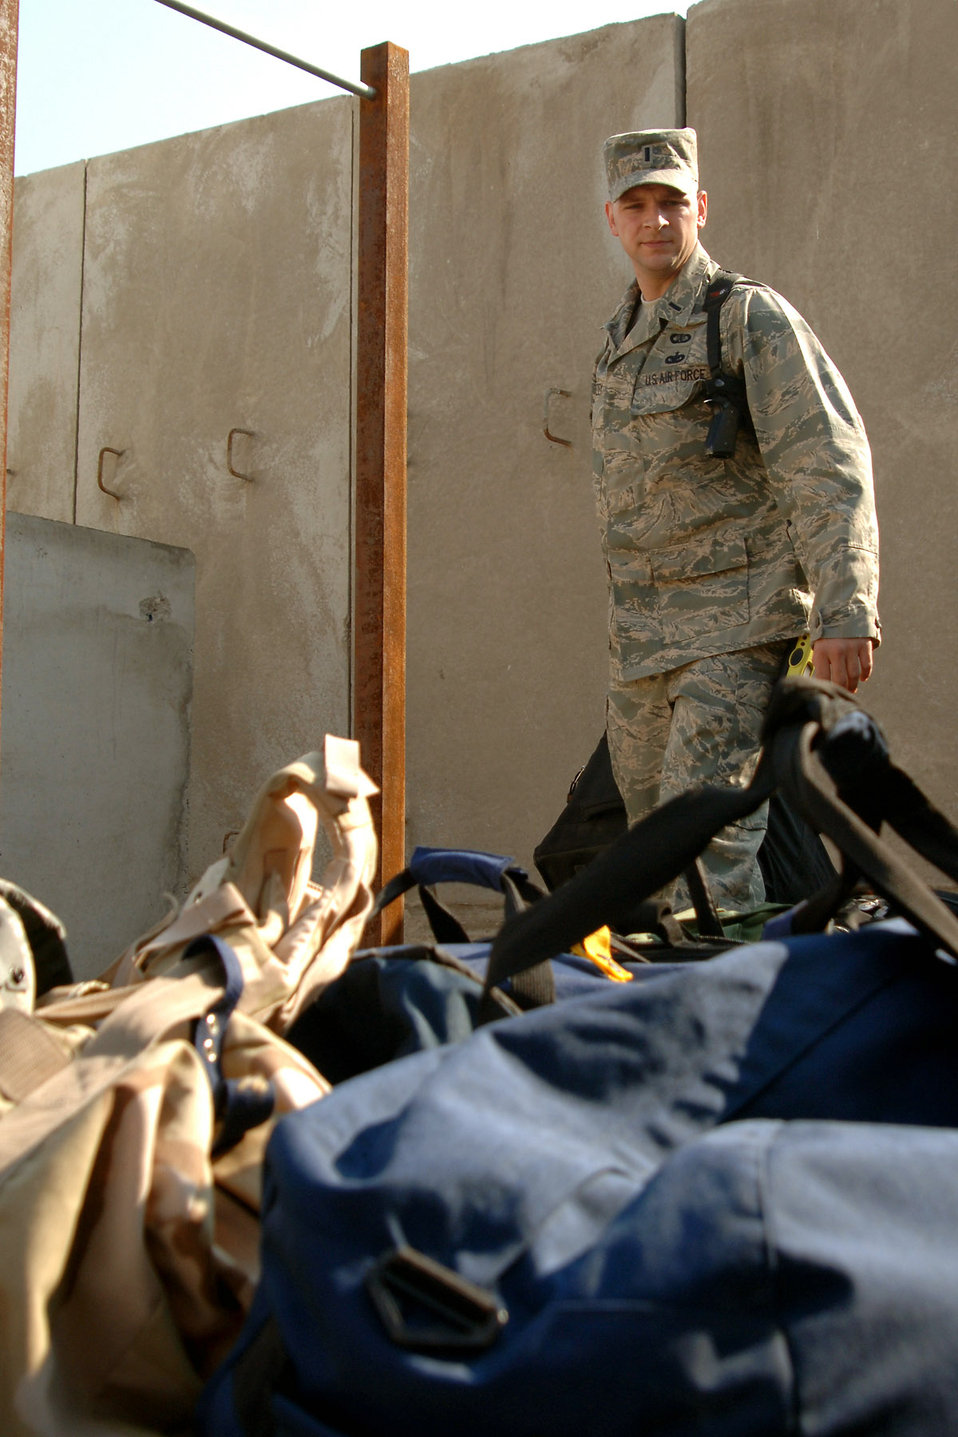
Protocol provides first-class service all the way

First Lt. Christopher Mazzey carries luggage to a distinguished visitor's quarters here. Protocol personnel help with luggage detail and making sure rooms are ready for any DVs visiting and staying at Balad Air Base, Iraq. Lieutenant Mazzey is the 332nd Air Expeditionary Wing deputy chief of protocol.